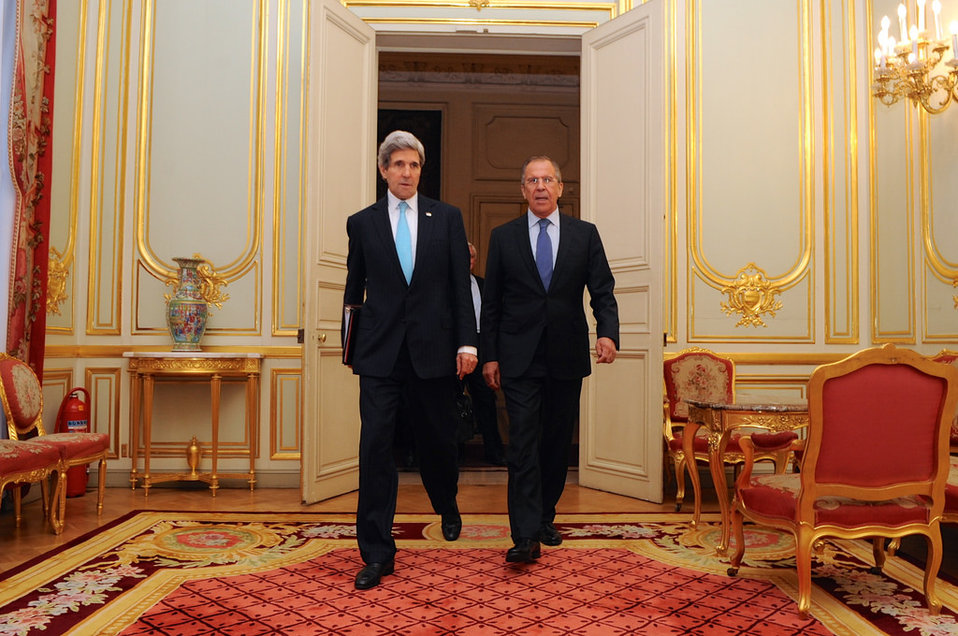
Secretary Kerry, Russian Foreign Minister Lavrov Arrive for Ukraine Meeting in Paris

U.S. Secretary of State John Kerry and Russian Foreign Minister Sergey Lavrov walk through the Russian Ambassador's house in Paris, France, on March 30, 2014, before a meeting focused on Ukraine.